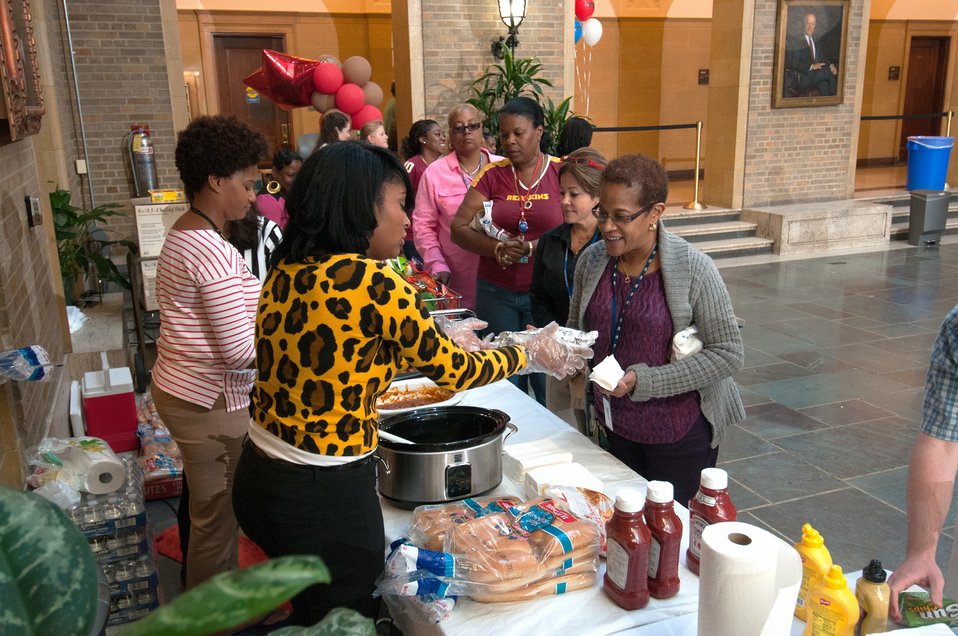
Each chili dog lunch generated a suggested $5 donation to the 2013 Combined Federal Campaign during it's opening ceremony and fund raising event on Tuesday, Sept 17, 2013 in the Whitten Building, U.S. Department of Agriculture (USDA), Washington, D.C. Employees took personal time to attend and participate in fund raising activities that generated donations and donation registrations that will help support charities. The Combined Federal Campaign (CFC) is the largest and most successful workplace charitable giving drive in the world. CFC is the only authorized charitable organization solicitation of Federal employees in their workplaces. CFC is structured to support and to promote philanthropy through a voluntary program that is cost-efficient and effective in providing all Federal employees the opportunity to impact the CFC charitable interest of their choosing. For more information about CFC, please see www.usda.gov/wps/portal/usda/usdahome?navid=USDA CFC USDA Photo by Lance Cheung.